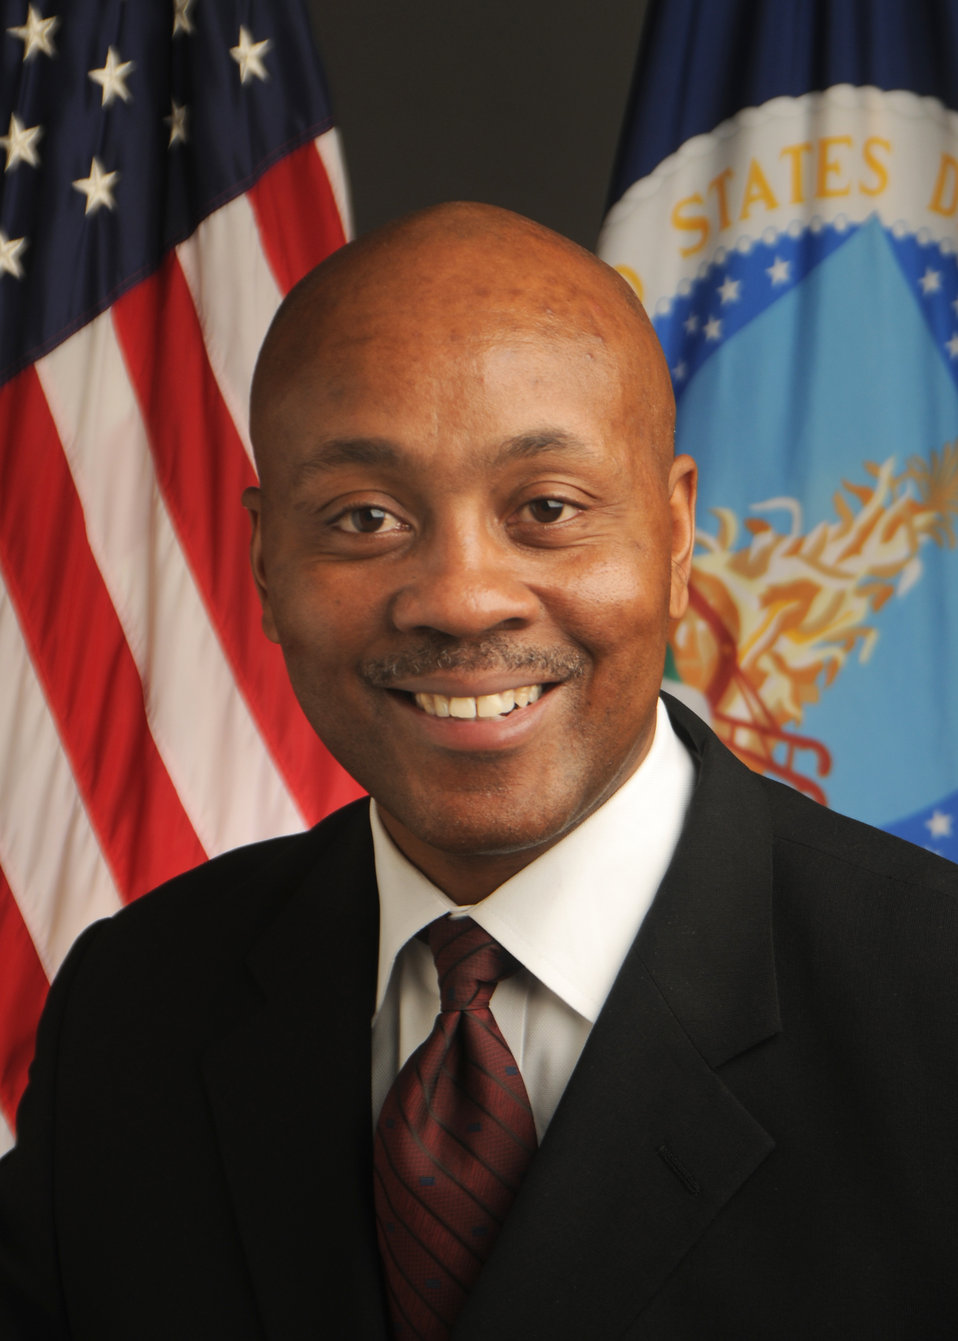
10di1093 Chief Information Officer Natural Resources Conservation Service Gary Washington

Gary Washington, NRCS Chief of Information official portrait.